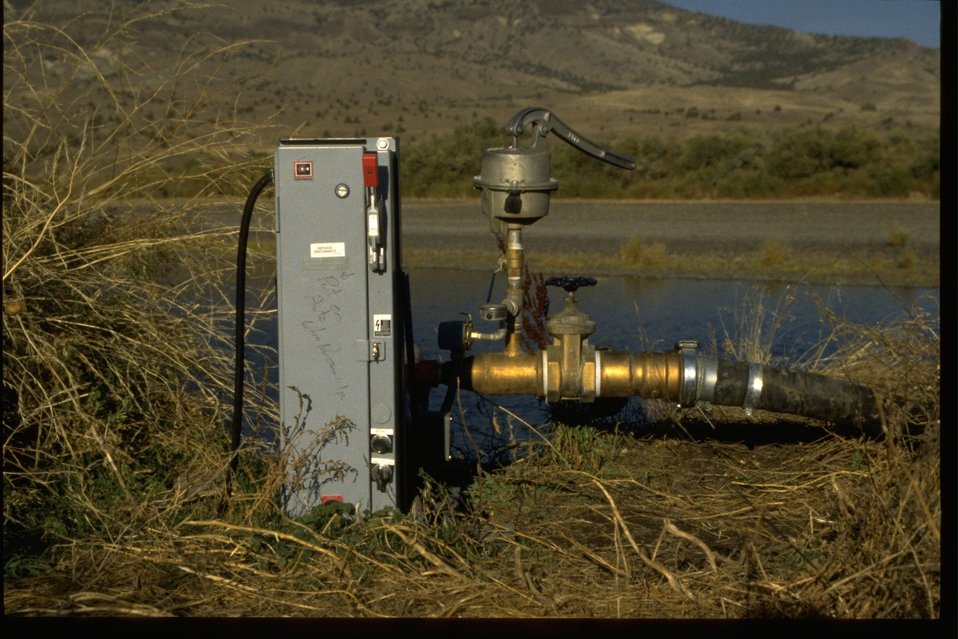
Electronic pump system for wildlife and cottonwood fields in the John Day River.